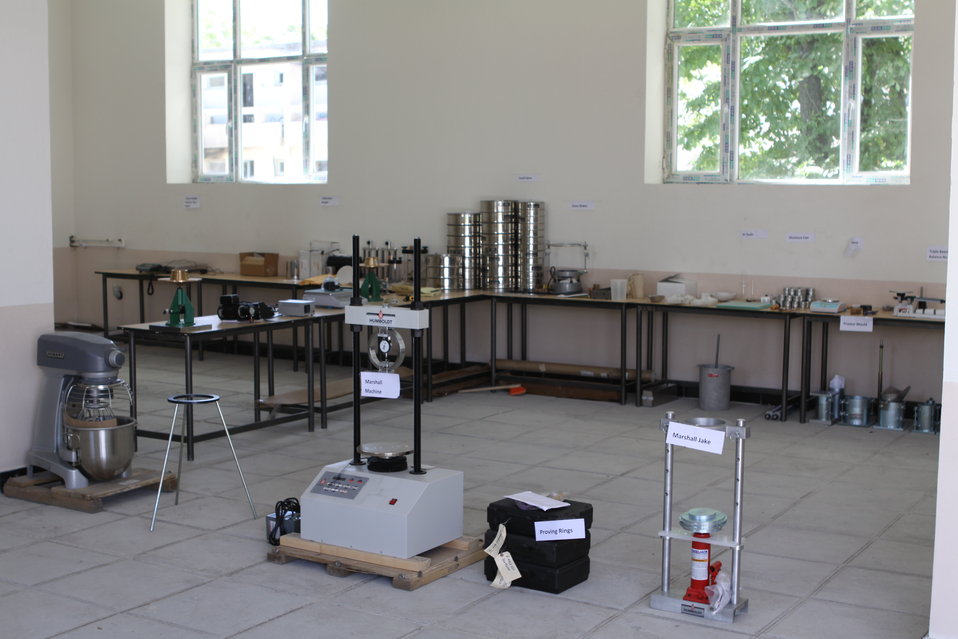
100522 ATVI Graduation 001